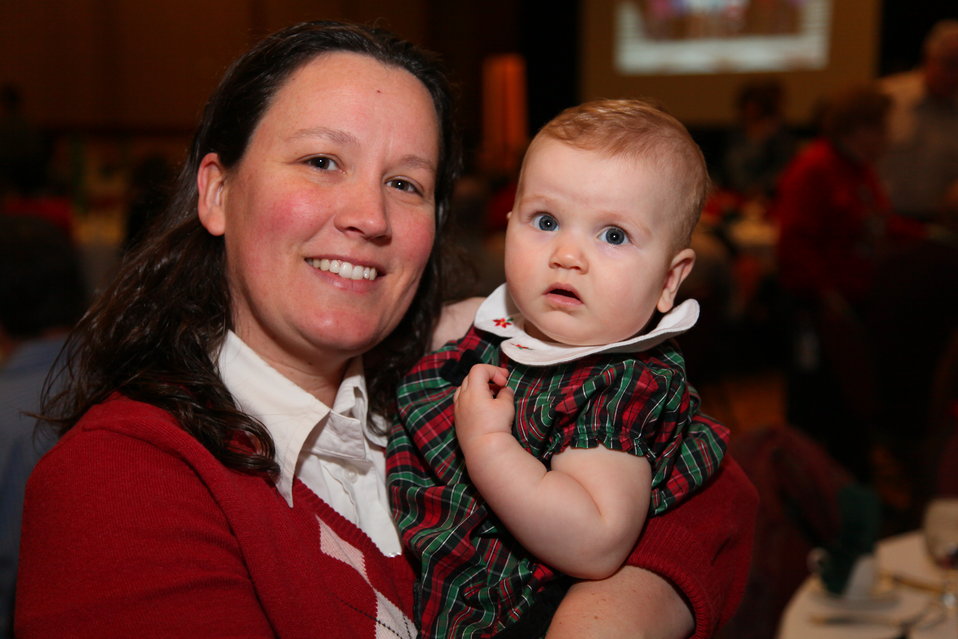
Sacramento District Holiday Party 2011